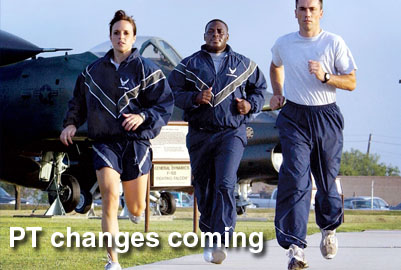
Air Force officials emphasize individual fitness responsibility

While Air Force commanders have the responsibility to maintain a unit fitness program, the new fitness Air Force instruction will better emphasize each Airman?s responsibility to meet and maintain fitness standards, officials said Nov. 13, 2009, in Washington, D.C.